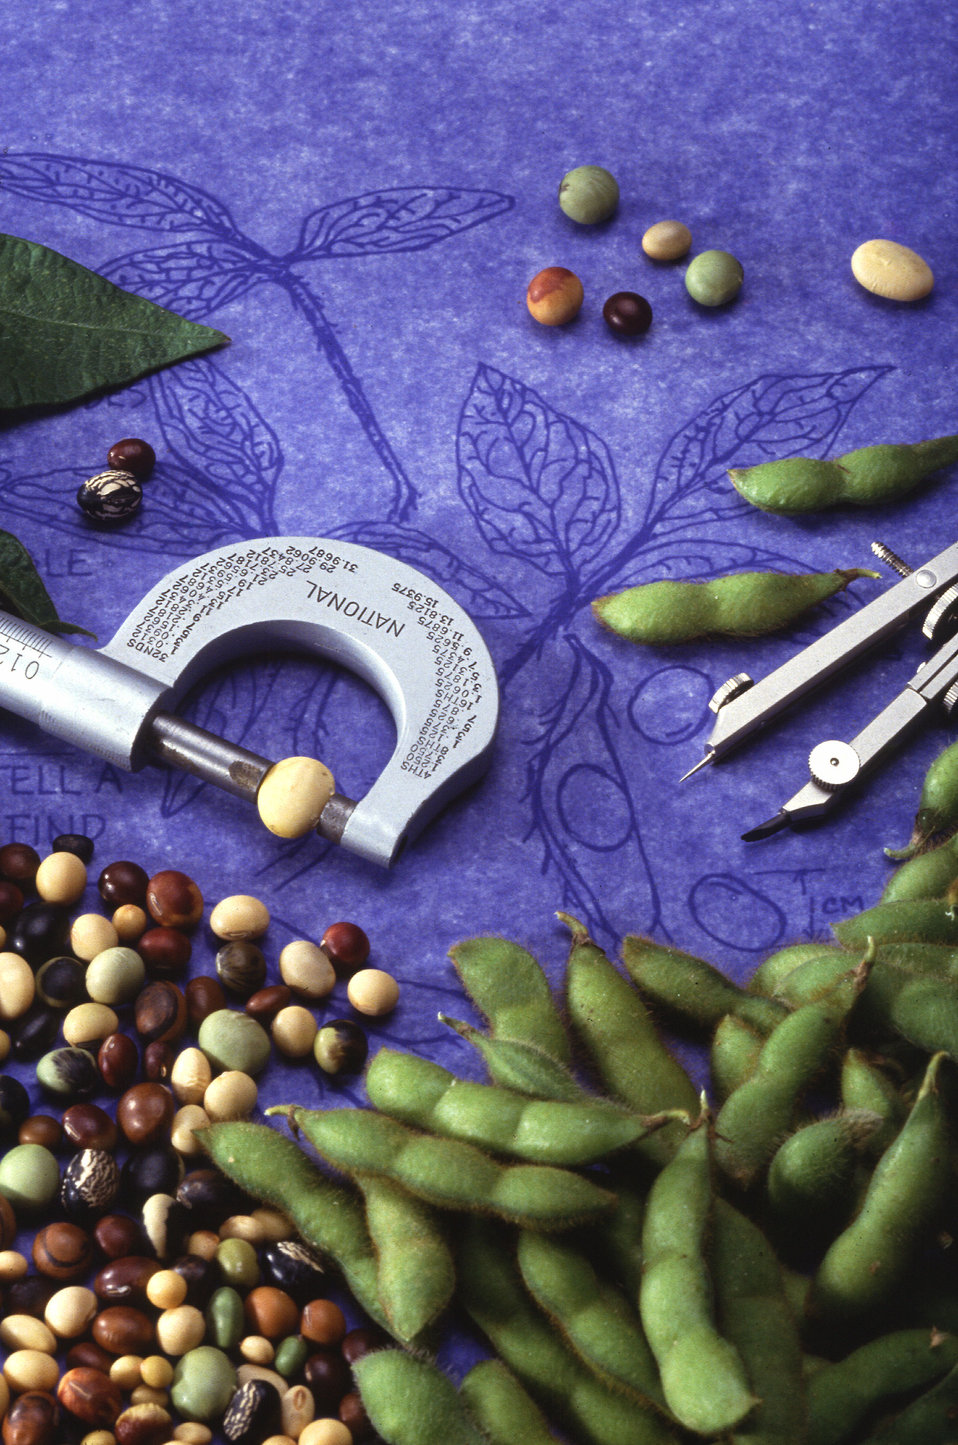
Scientists continue to develop new strains of soybeans, a crop that's now second only to corn in importance to U.S. farmers.